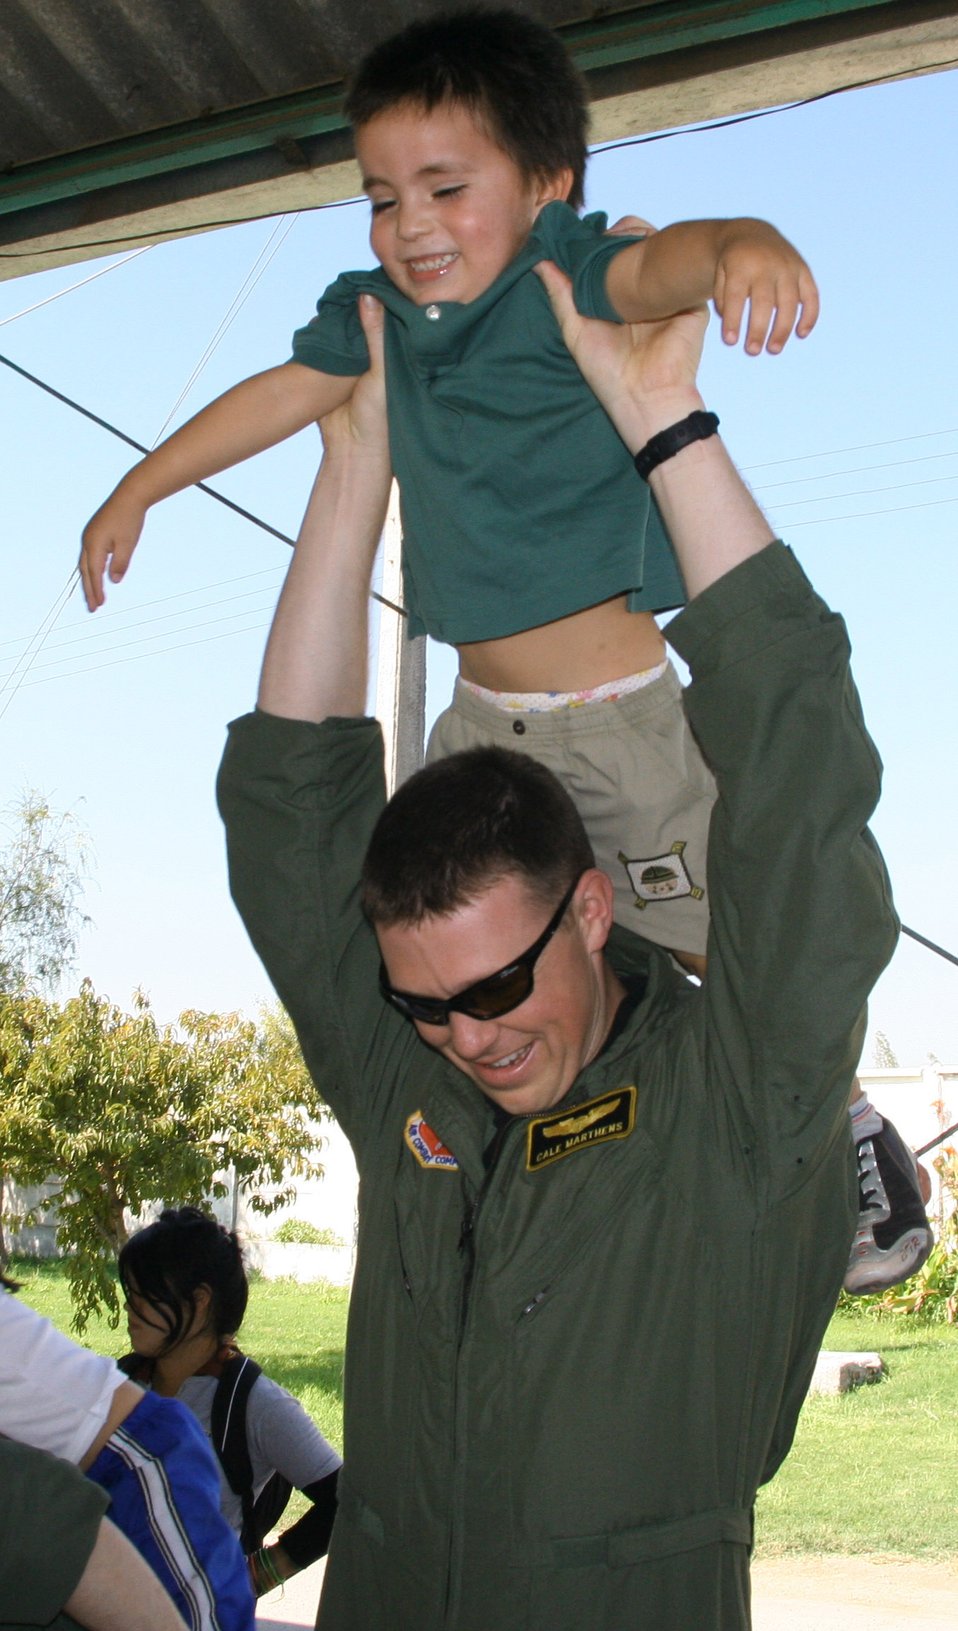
Airmen visit Chilean orphanage

Capt. Cale Marthens lifts up a Chilean orphan April 3 at Koinomadelfia Orphanage west of Santiago, Chile. Twenty Airmen showcased the F-15E Strike Eagles at FIDAE, the largest air show in South America. The Airmen also visited more than 30 toddlers at the orphanage and handed out toys, stickers and patches. Captain Marthens is assigned to the 391st Fighter Squadron from Mountain Home Air Force Base, Idaho.